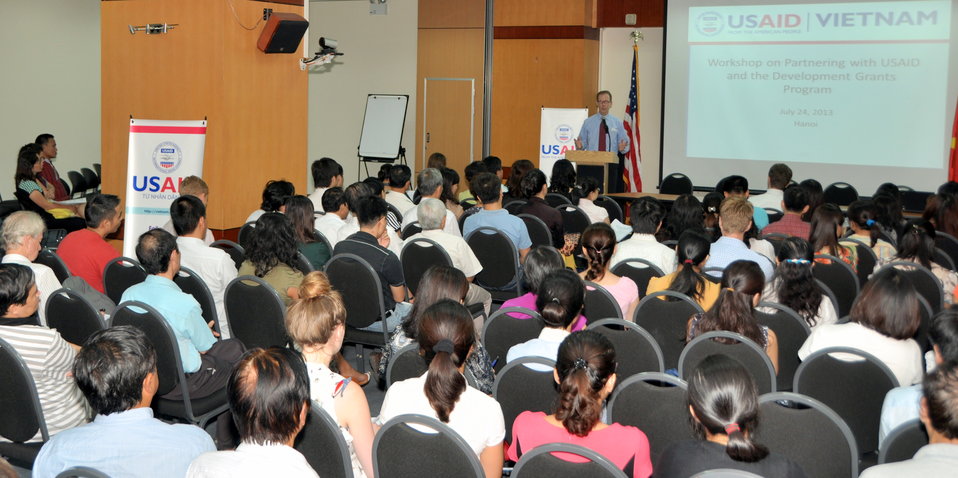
Development Grants Program Workshop in Hanoi

July 24, 2013